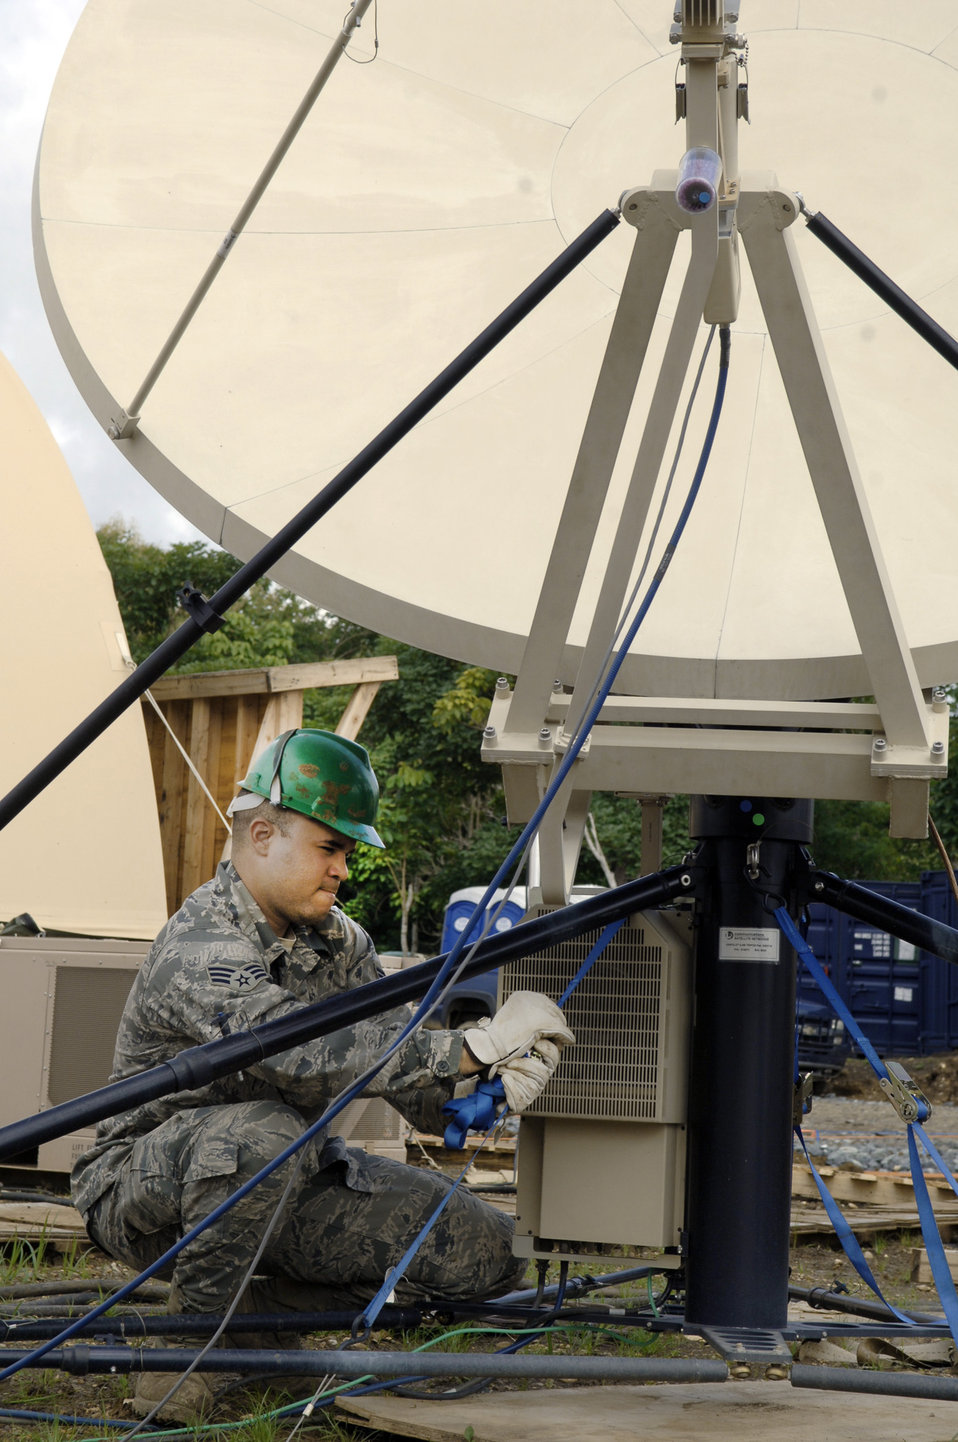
32 CBCS at New Horizons

Senior Airman Cesar Morales secures the base of the satellite array July 28, 2010, during Exercise New Horizons Panama 2010. Airman Morales is deployed from the 32nd Combat Communications Squadron.